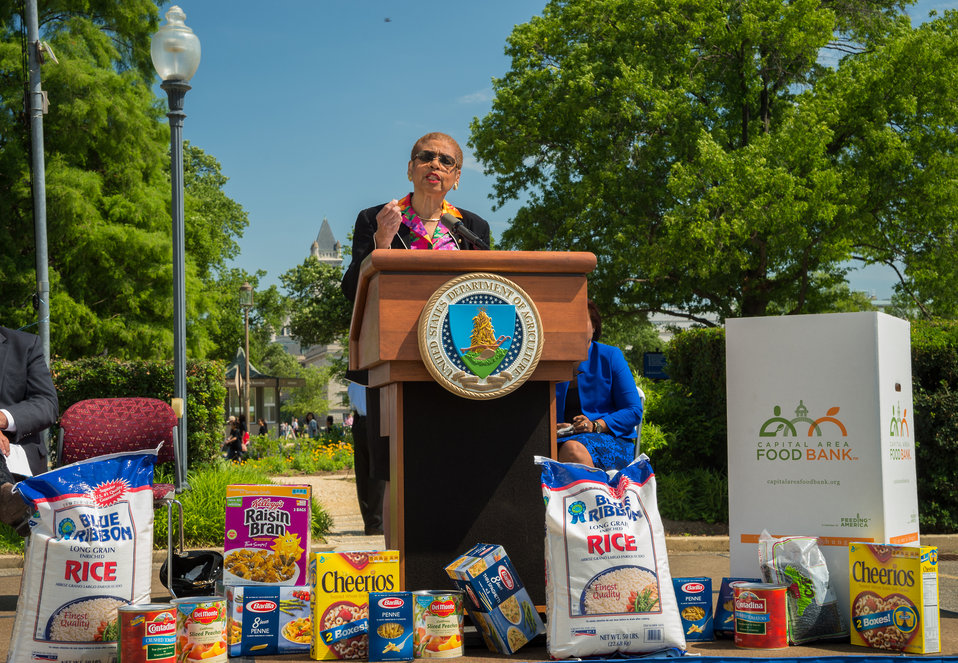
Congresswoman Eleanor Holmes Norton thanked Federal employees for their dedication to helping those in need by donating food during the 2014 National Feds Feed Families Campaign at the United States Department of Agriculture’s (USDA’s) People’s Garden in Washington, DC, Mon. Jun. 2, 2014. The theme of this year’s event is, “Help Knock Out Hunger.” The U.S. Department of Agriculture will lead the campaign with the support of the Chief Human Capital Officers Council and other agency partners, which officially begins on June 1 and will run through August 27, 2014.